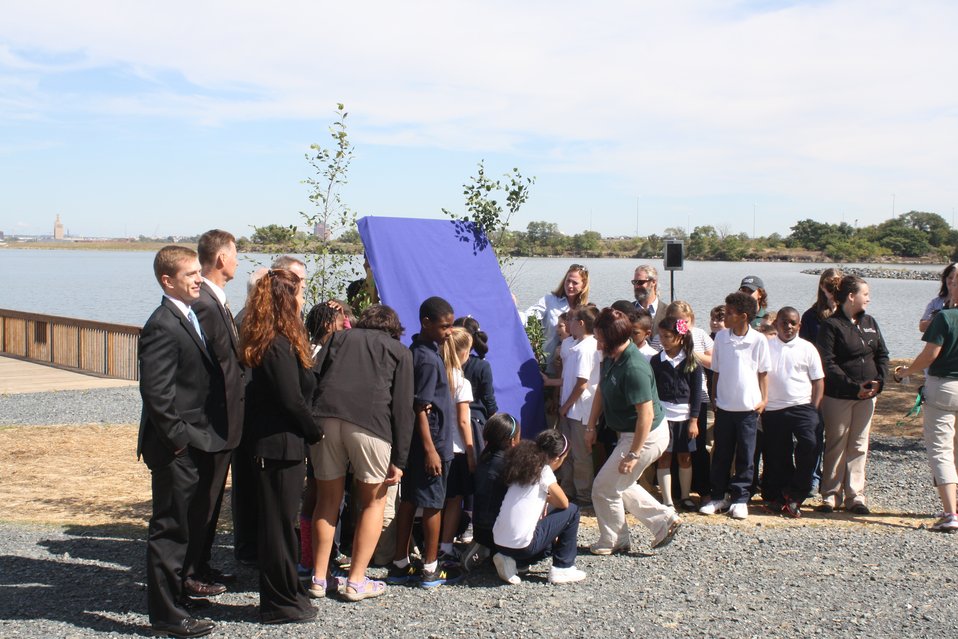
Preparing to unveil the Masonville designation sign

Students from Curtis Bay Elementary School prepare to unveil e Masonville Cove Urban Wildlife Refuge Partnership sign along with partners.